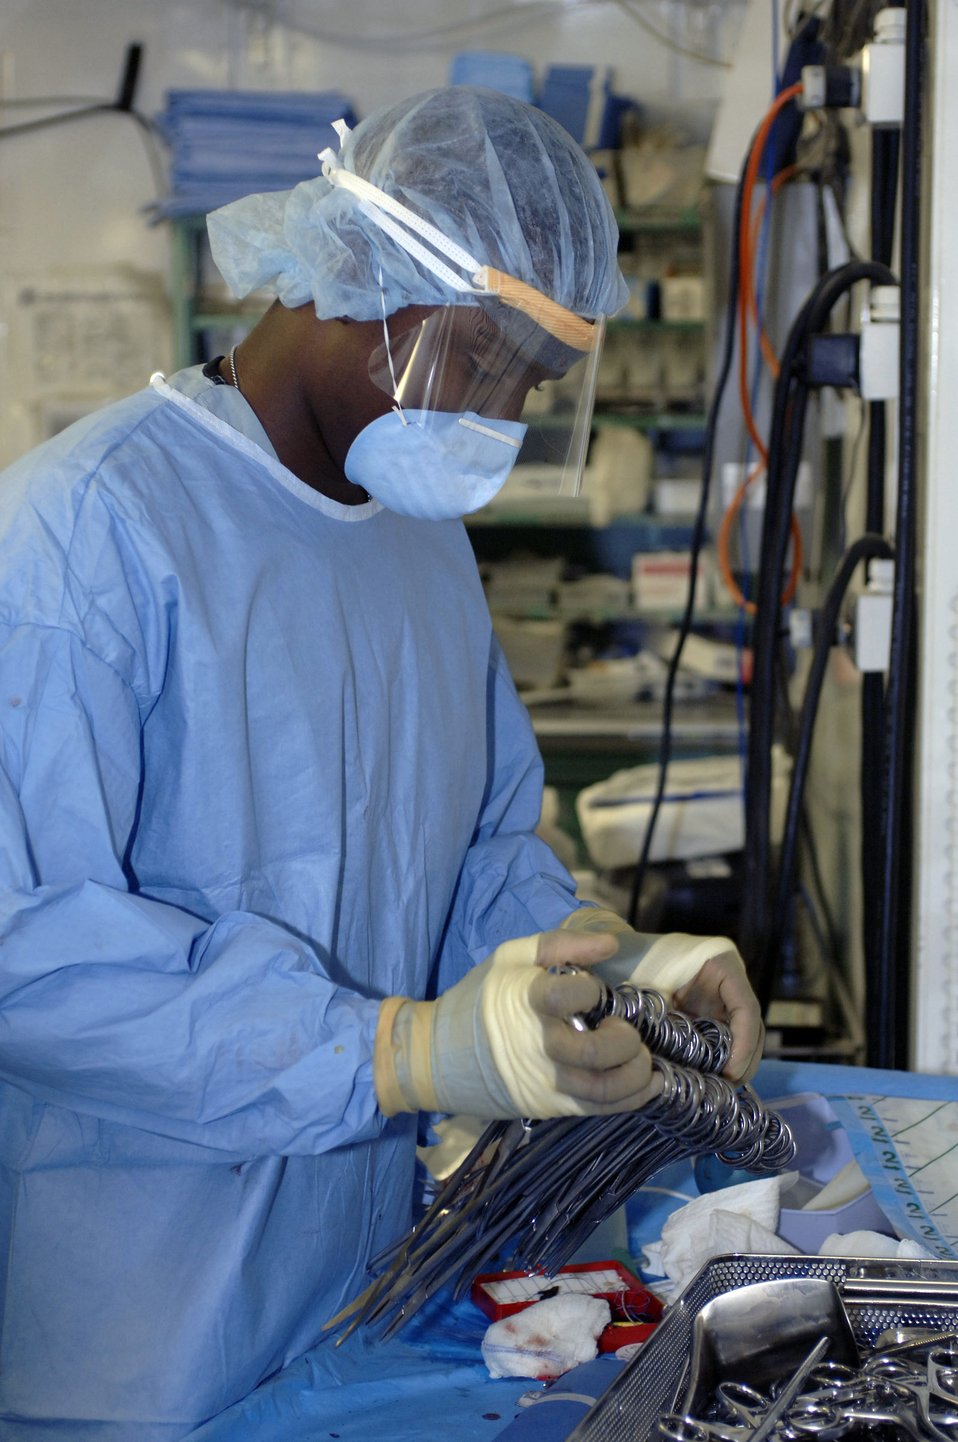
Surgeon support

BALAD AIR BASE, Iraq -- An Air Force surgeon preps equipment for emergency surgery on Iraqis caught in the car bomb blasts that occurred Sept. 29 in the town of Balad. Victims of the attack were rushed here to the Air Force Theater Hospital.